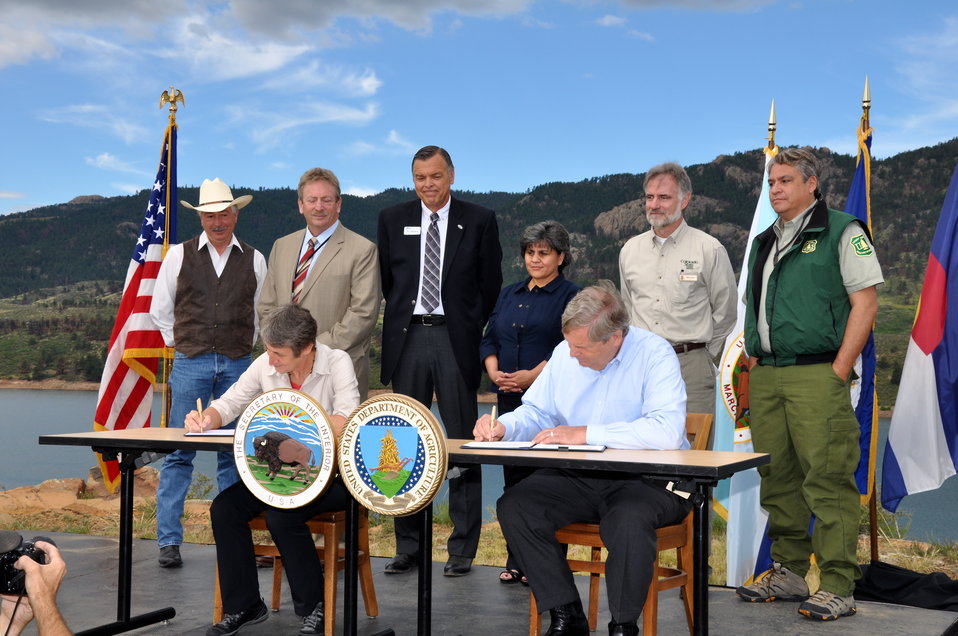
Agriculture Secretary Tom Vilsack and Interior Secretary Sally Jewell sign a Memorandum of Understanding (MOU) at the Horsetooth Reservoir in Fort Collins, CO on Jul. 19, 2013. This MOU will facilitate activities such as wildfire risk reduction through forest thinning, prescribed fire and other forest health treatments; minimizing post-wildfire erosion and sedimentation; and restoring areas that are currently recovering from past wildfires through tree planting and other habitat improvements.